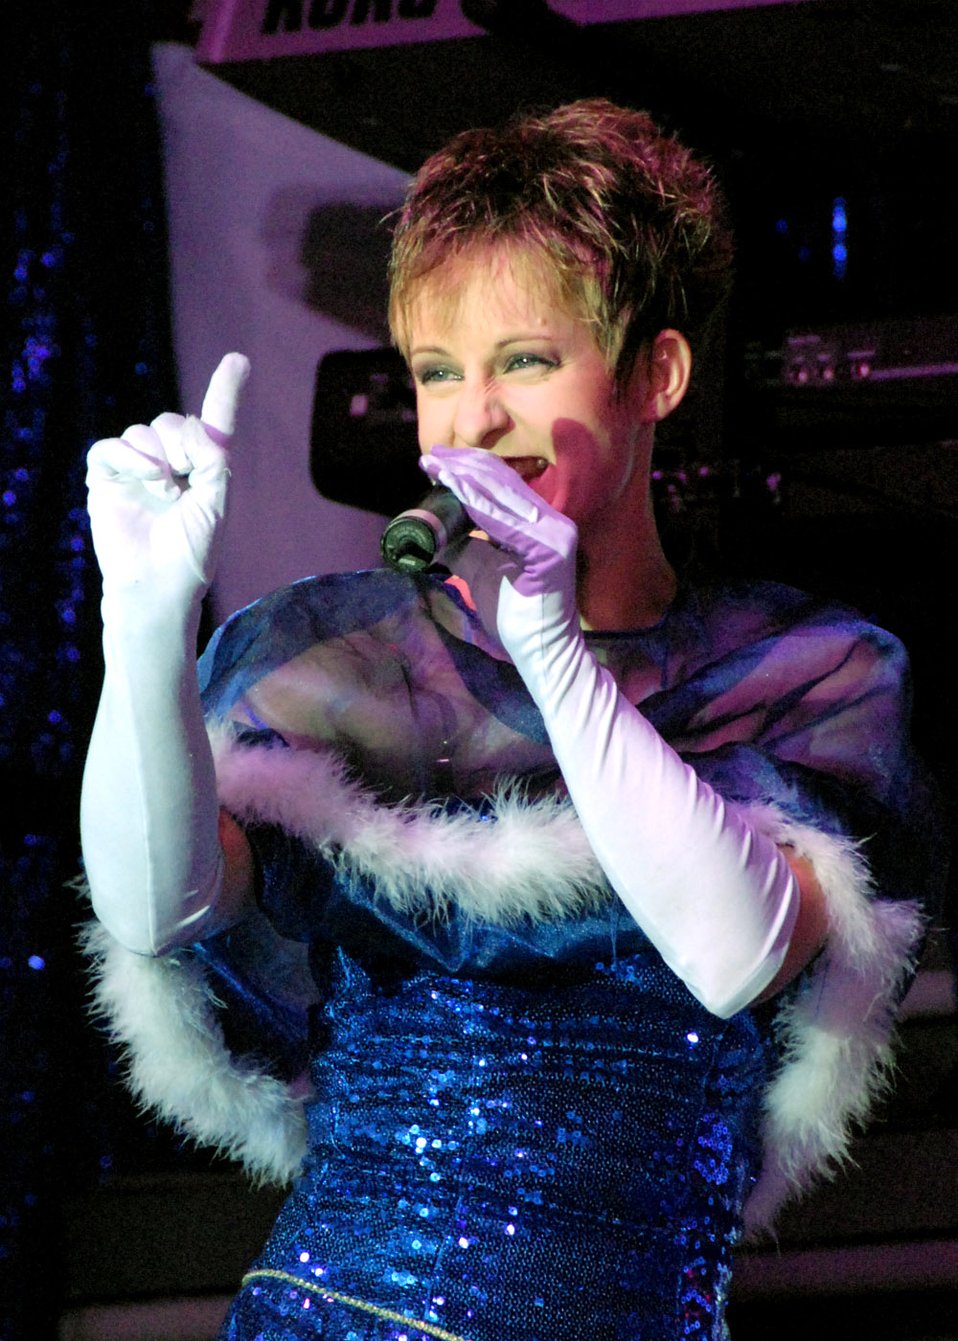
Tops In Blue performs at Osan

Senior Airman April Vollm performs during Tops In Blue's annual world tour celebrating